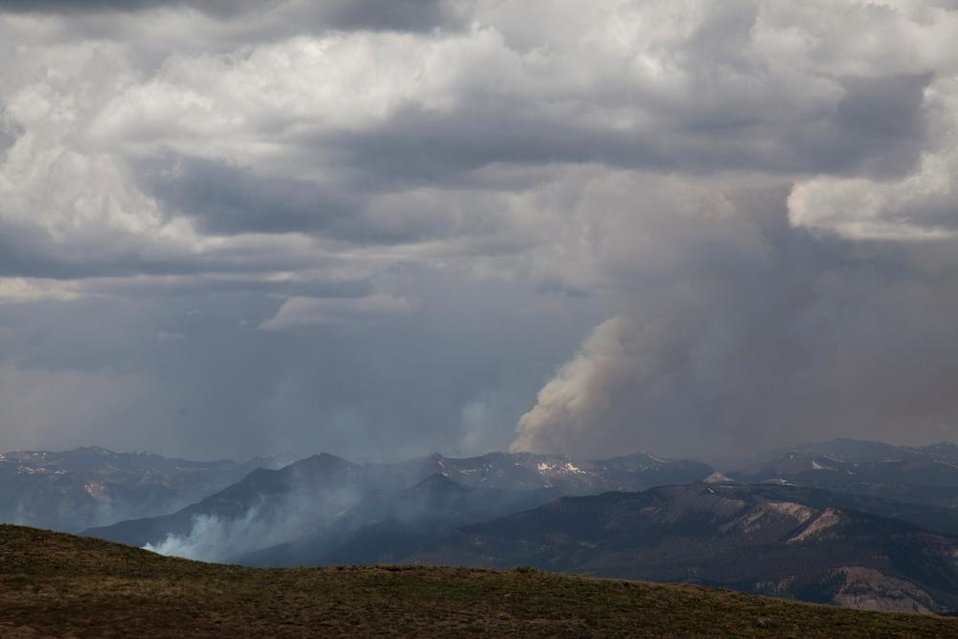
Looking north from the Continental Divide at Elwood Passs towards the West Fork Complex Fires. The West Fork Complex Fire is made of four fires, Papoose Fire, East Zone of West Fork Fire, West Zone of West Fork Fire, and Windy Pass Fire. The fires located in the vicinity of Pagosa Springs, CO began on Jun. 05, 2013 by lightning strikes. The multiple fires have consumed approximately 70, 262 acres. Windy Pass Fire is in the foreground.